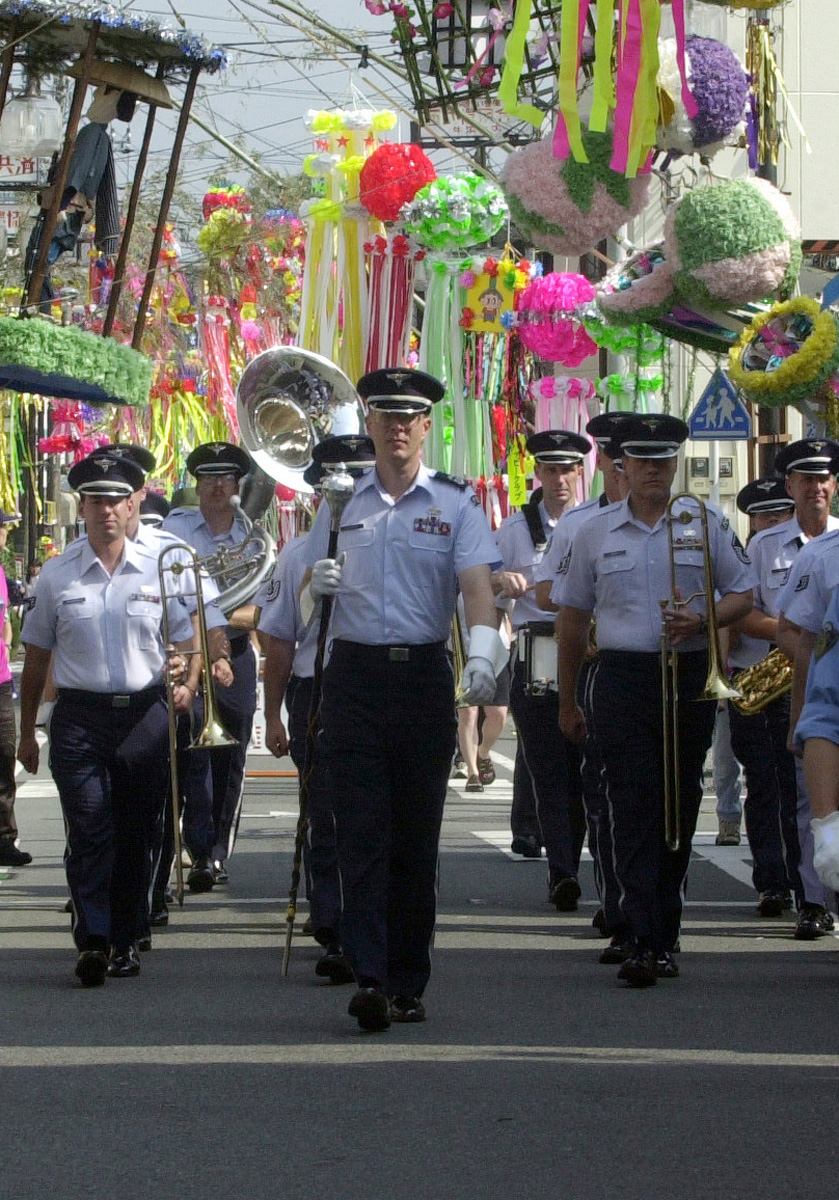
Parade

FUSSA CITY, Japan -- Senior Master Sgt. Tait Solberg (center), drum major for the U.S. Air Force Band of the Pacific-Asia, Yokota Air Base, Japan, leads his band through the decorated streets here, during the Tanabata Festival.